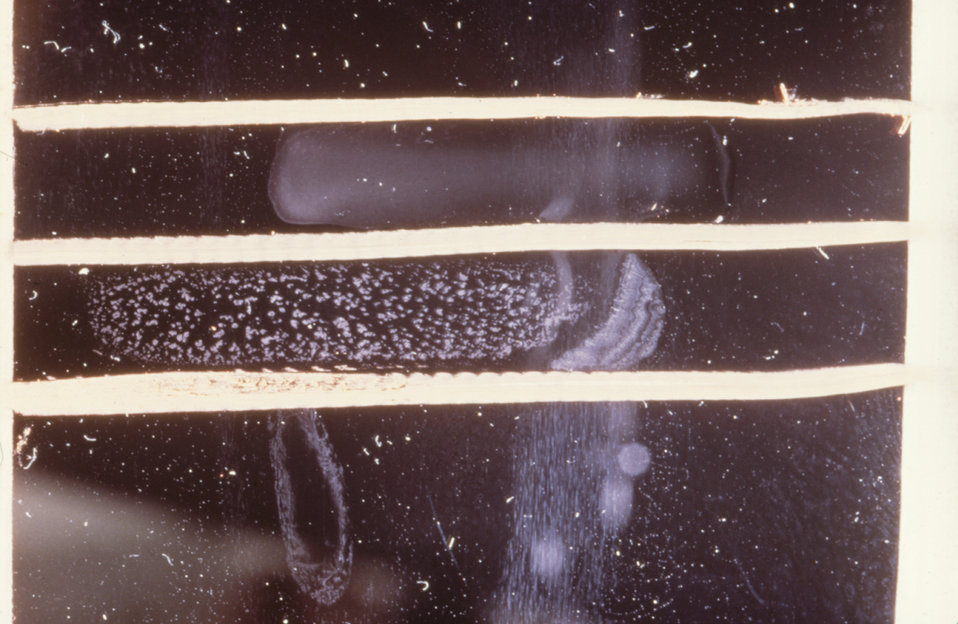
This agglutination test performed on a slide was used in a diagnostic procedure for Vibrio cholerae identification.